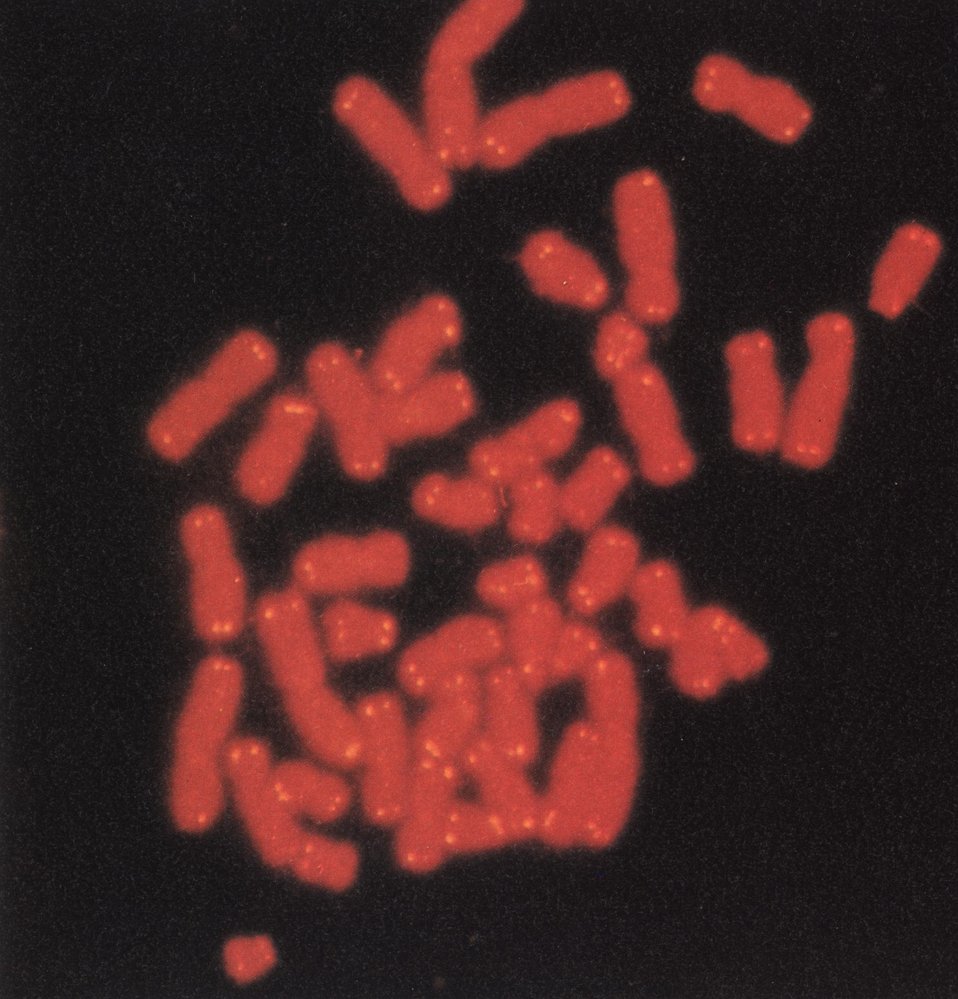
Identification and cloning of the human telemeter to define the ends of the human genetic and physical maps. Telemeters are defined as the ends of chromosomes. The specialized structures are involved in the replication and stability of linear DNA molecules.